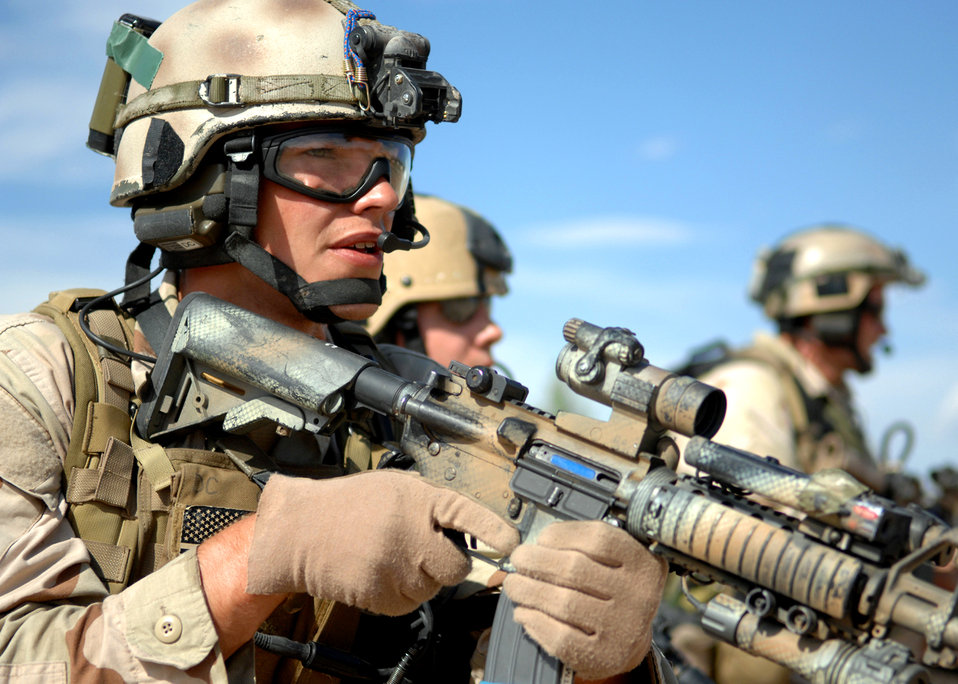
Angel Thunder 2007

Senior Airman David Covel maintains security while waiting for extraction from an urban training facility July 13 in Playas, N.M., during Exercise Angel Thunder 2007. Angel Thunder is a joint service combat search and rescue exercise designed to provide realistic training that tests theater spin-up capabilities and examines the integration of all Air Force assets in mission planning procedures and mission execution. Airman Covel is a pararescueman with the 58th Rescue Squadron at Nellis Air Force Base, Nev.